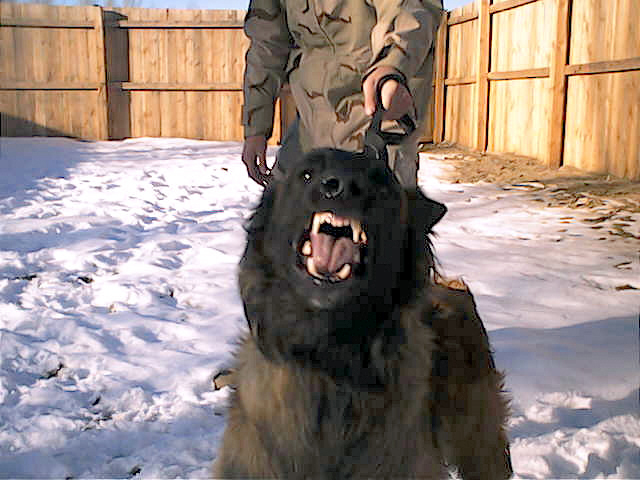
Dogs help secure base

MANAS AIR BASE, Kyrgyzstan -- Charque, a military working dog here, puts on his game face as he prepares to begin his shift.